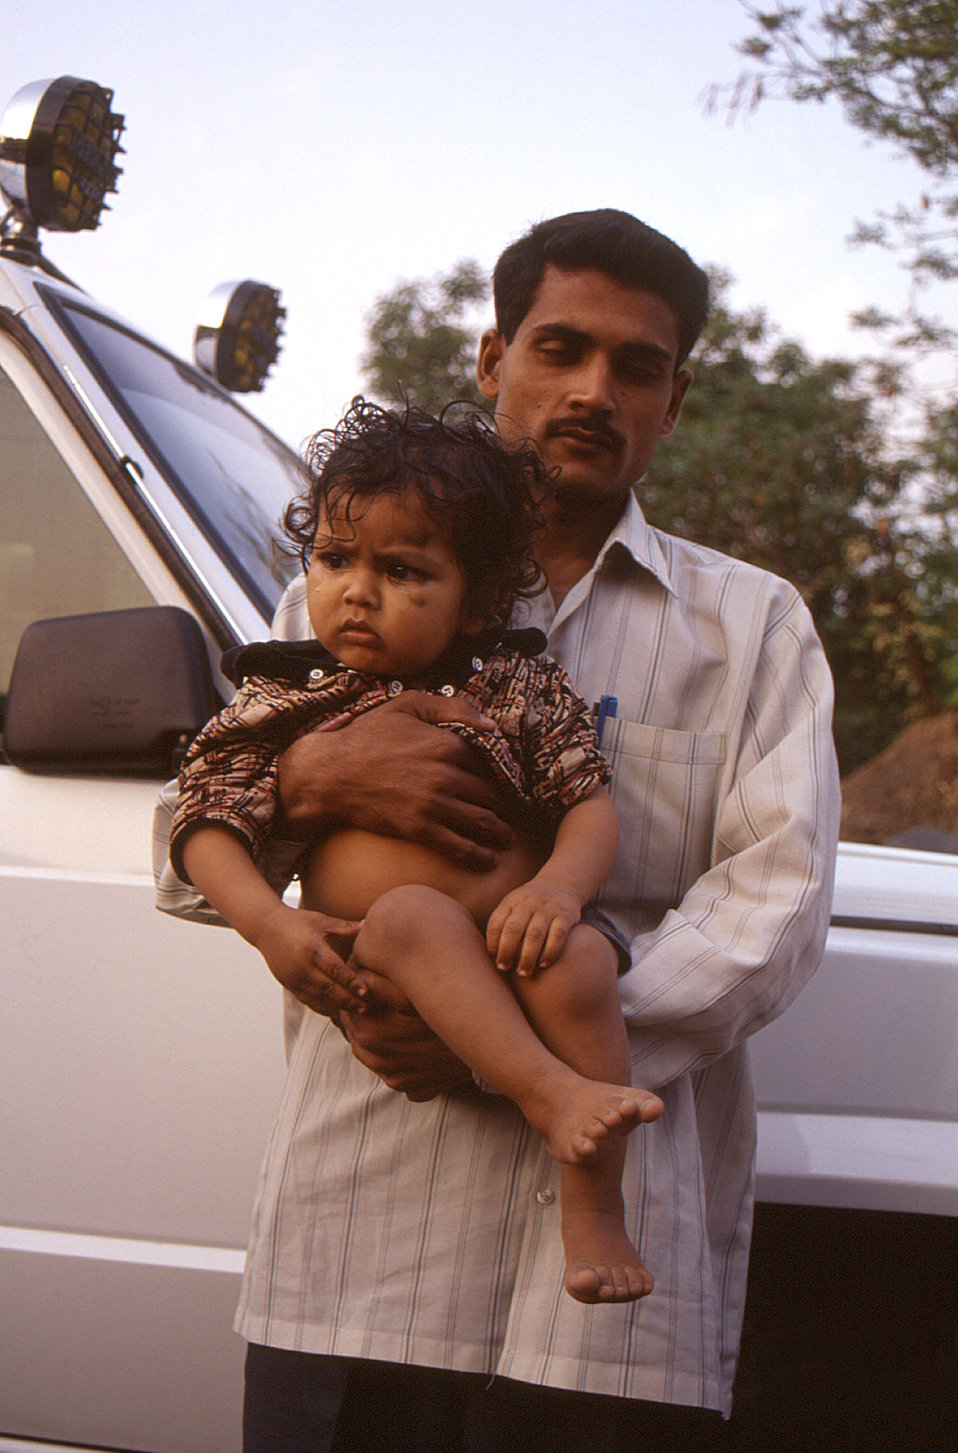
The child pictured here in this 2000 photograph held by her father, had been diagnosed with acute flaccid paralysis (AFP) two months prior to being photographed. The father was bringing his child to a physician for a follow-up evaluation. Since its inception in the fall of 1998, the STOP Transmission of Polio (STOP) immunization initiative teams have worked in over 50 countries. In the first years of the program, most STOP team members worked primarily to bolster AFP surveillance, support 'national immunization days' (NIDs), and conduct polio case investigation and follow-up.